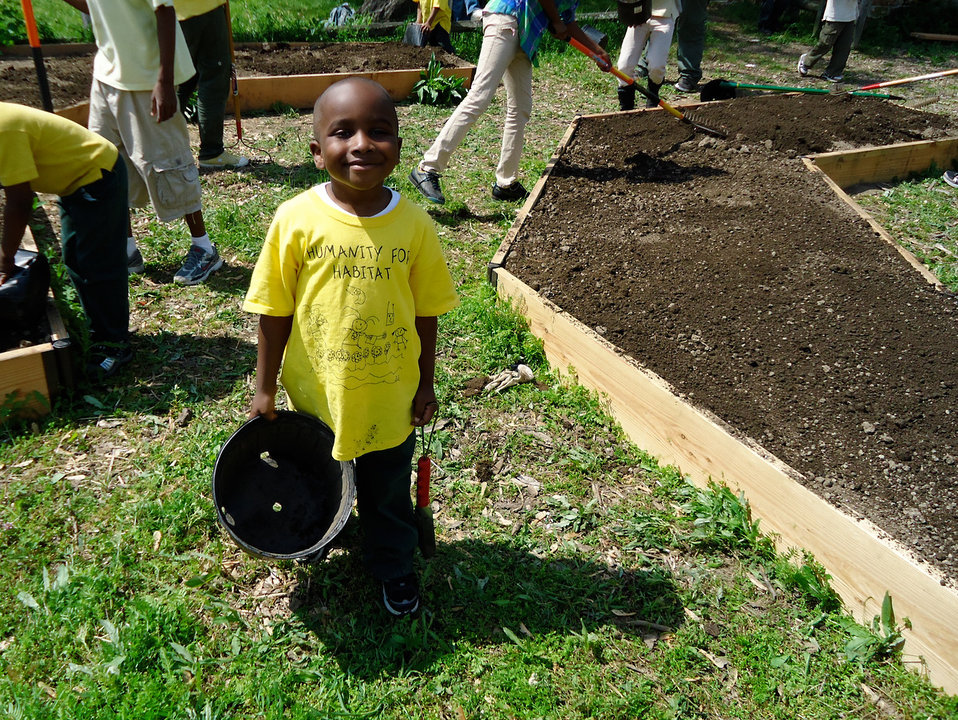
Pollinator Garden

Volunteers planting a pollinator garden at John Heinz National Wildlife Refuge at Tinicum, PA.